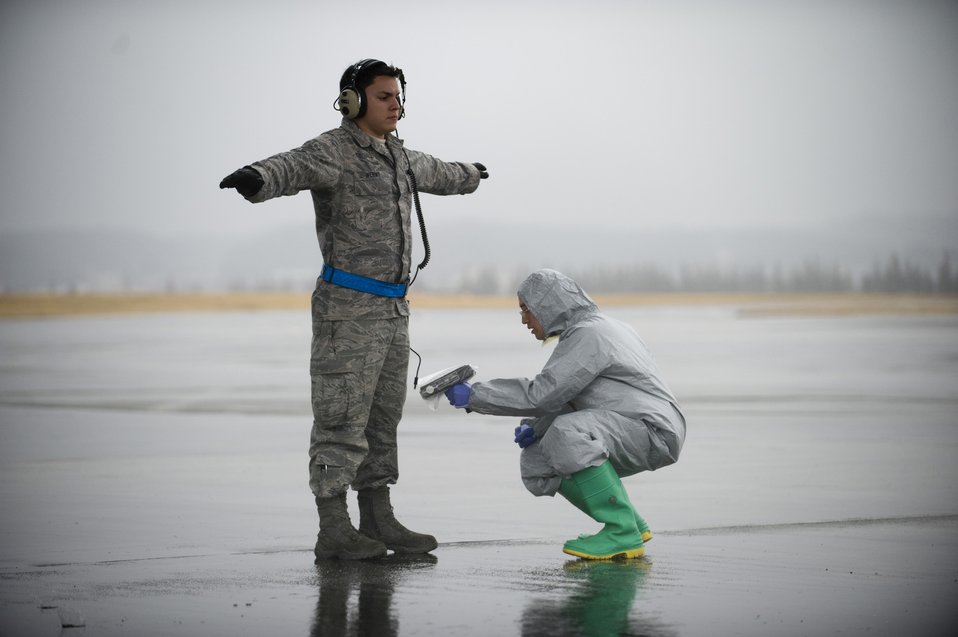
Checking for radiation

Senior Airman Daniel Burdick scans Staff Sgt. Aaron Wermy with a radiation survey meter March 21, 2011, at Yokota Air Base, Japan. Burdick is assigned to the 18th Aerospace Medicine Squadron at Kadena Air Base, Japan. Wermy is assigned to the 374 Aircraft Maintenance Squadron.